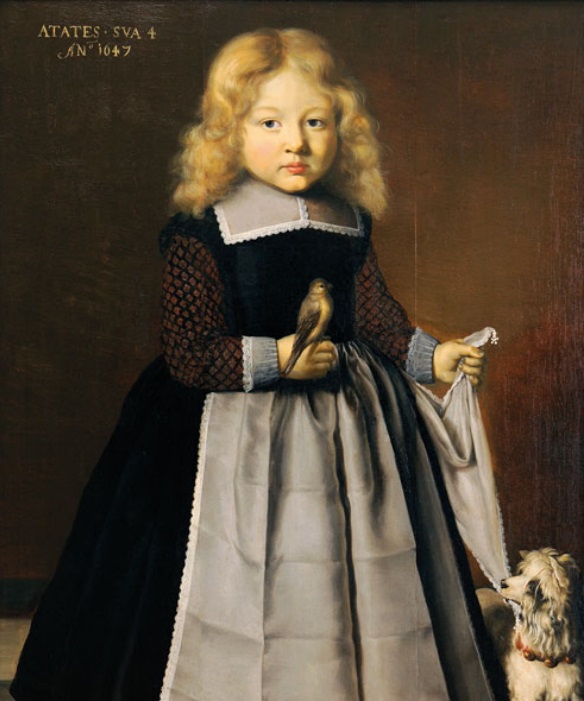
Geest A child with a dog